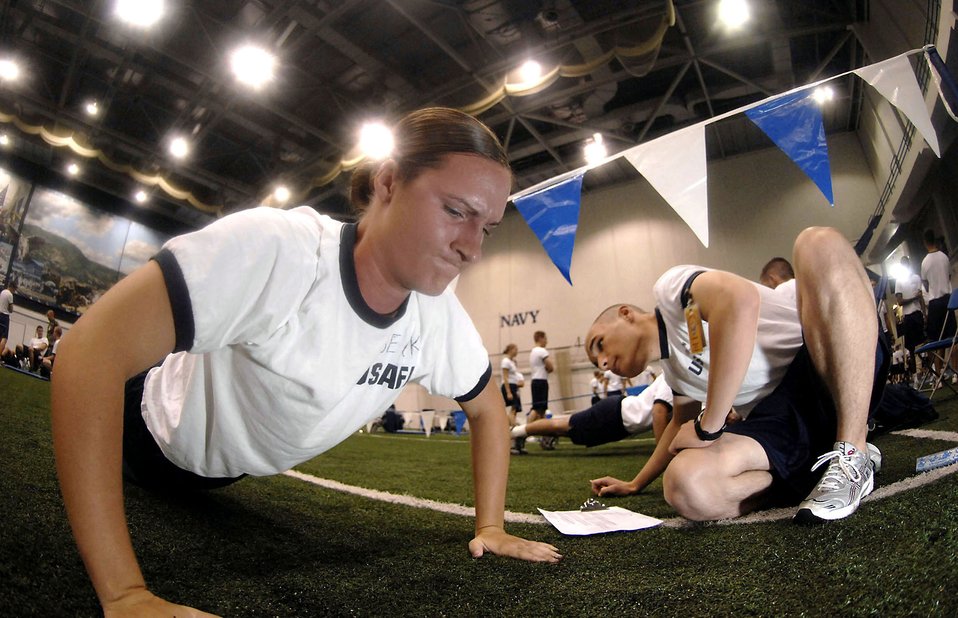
Put to the test

Cadet 4th Class Raimee Beck struggles to get as many push-ups as possible while Cadet 2nd Class Devin Bordelon ensures proper form during her physical fitness test July 12 at the U.S. Air Force Academy, Colo. Females need 48 to receive maximum points for the push up portion of the test. The Academy received 9,162 application for this year's class in which only 1,600 were offered appointments. These first-year cadets receive basic discipline and skills to help develop them into officers.